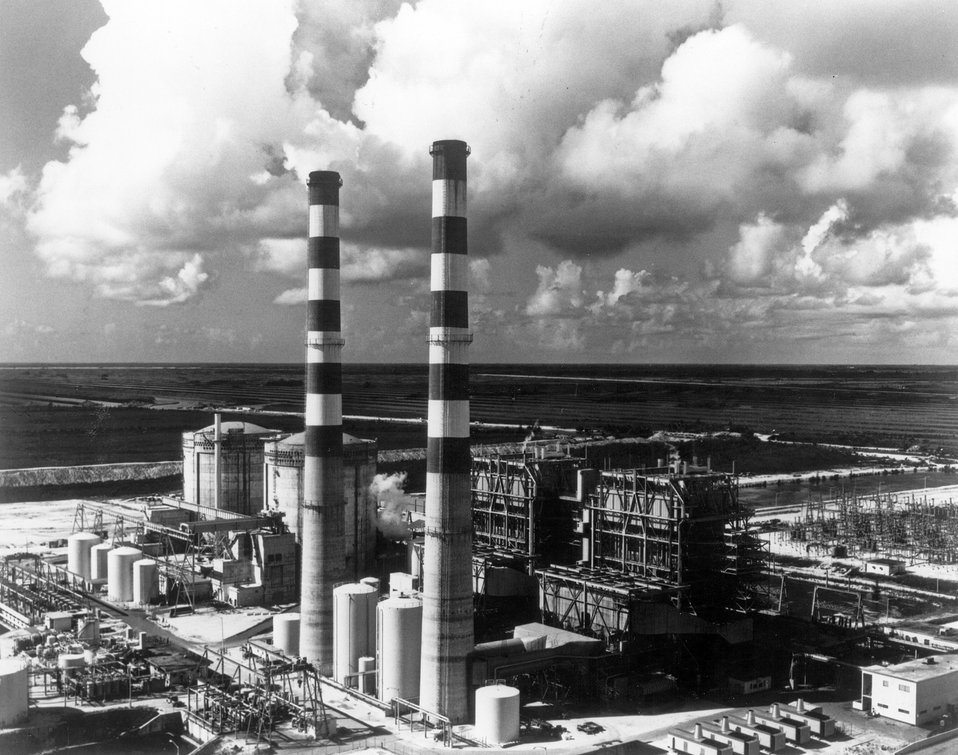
Turkey Point...A view of Florida Power & Light Co.'s Turkey Point Plant showing a portion of the cooling canals system in the background. Circa 1974.